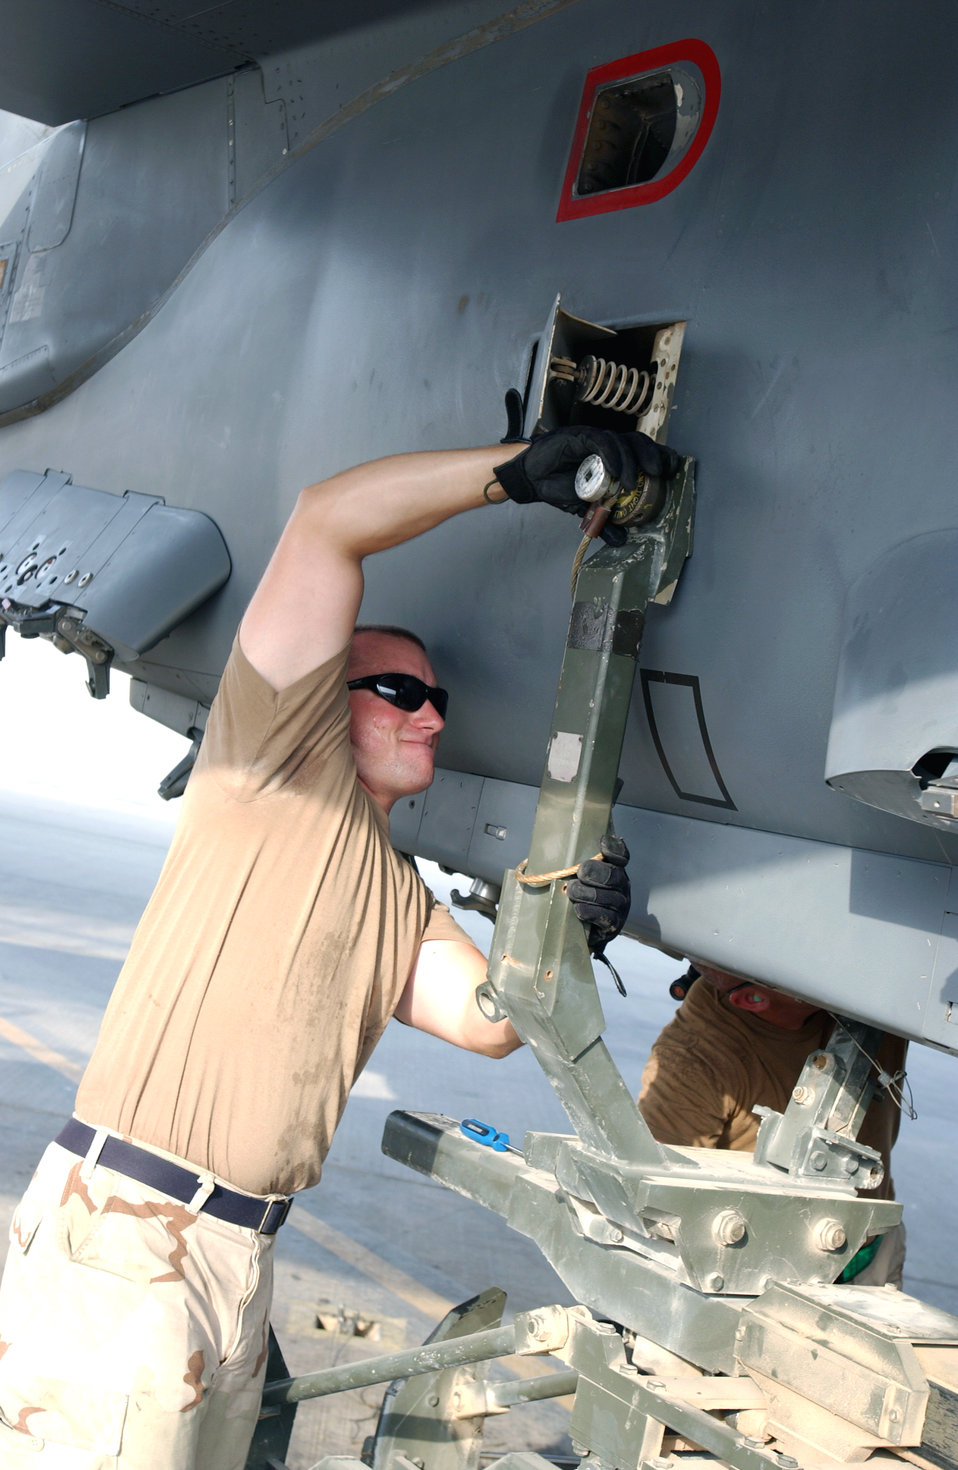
Keeping the strike in the Strike Eagles

Staff Sgt. Kiel Nichols installs a fuel tank on an F-15E Strike Eagle at a forward-operating base in Southwest Asia Sept. 1. Sergeant Nichols is a crew chief deployed from the 335th Aircraft Maintenance Unit at Seymour Johnson Air Force Base, N.C.